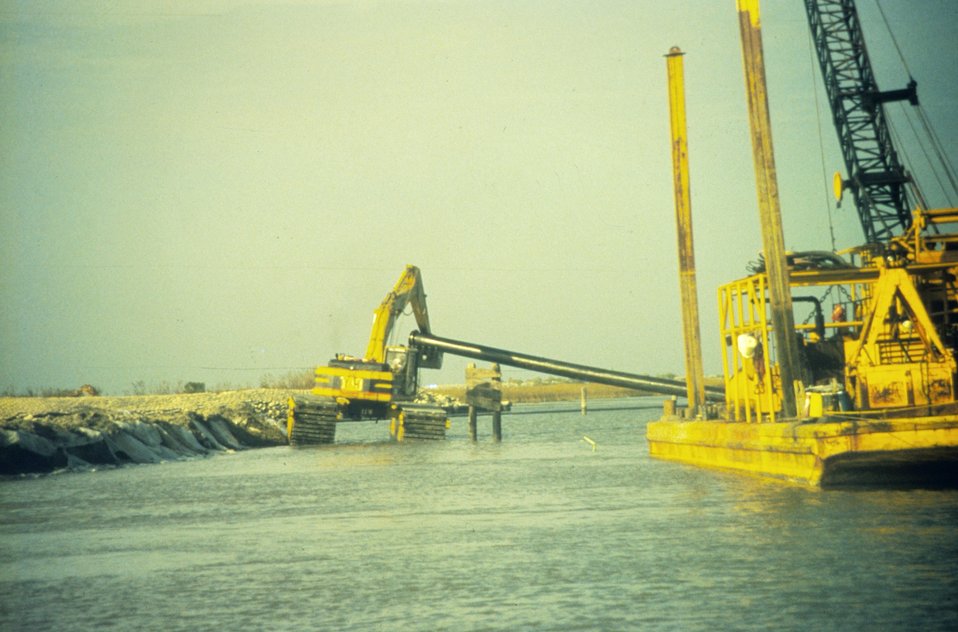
Restoration work underway.